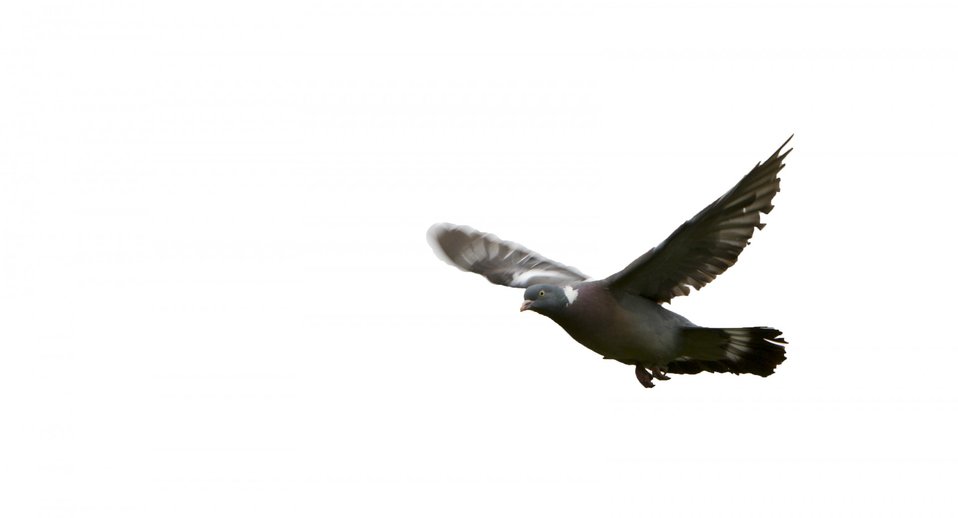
Bird flight white background

Pigeon bird in flight isolated on white background.